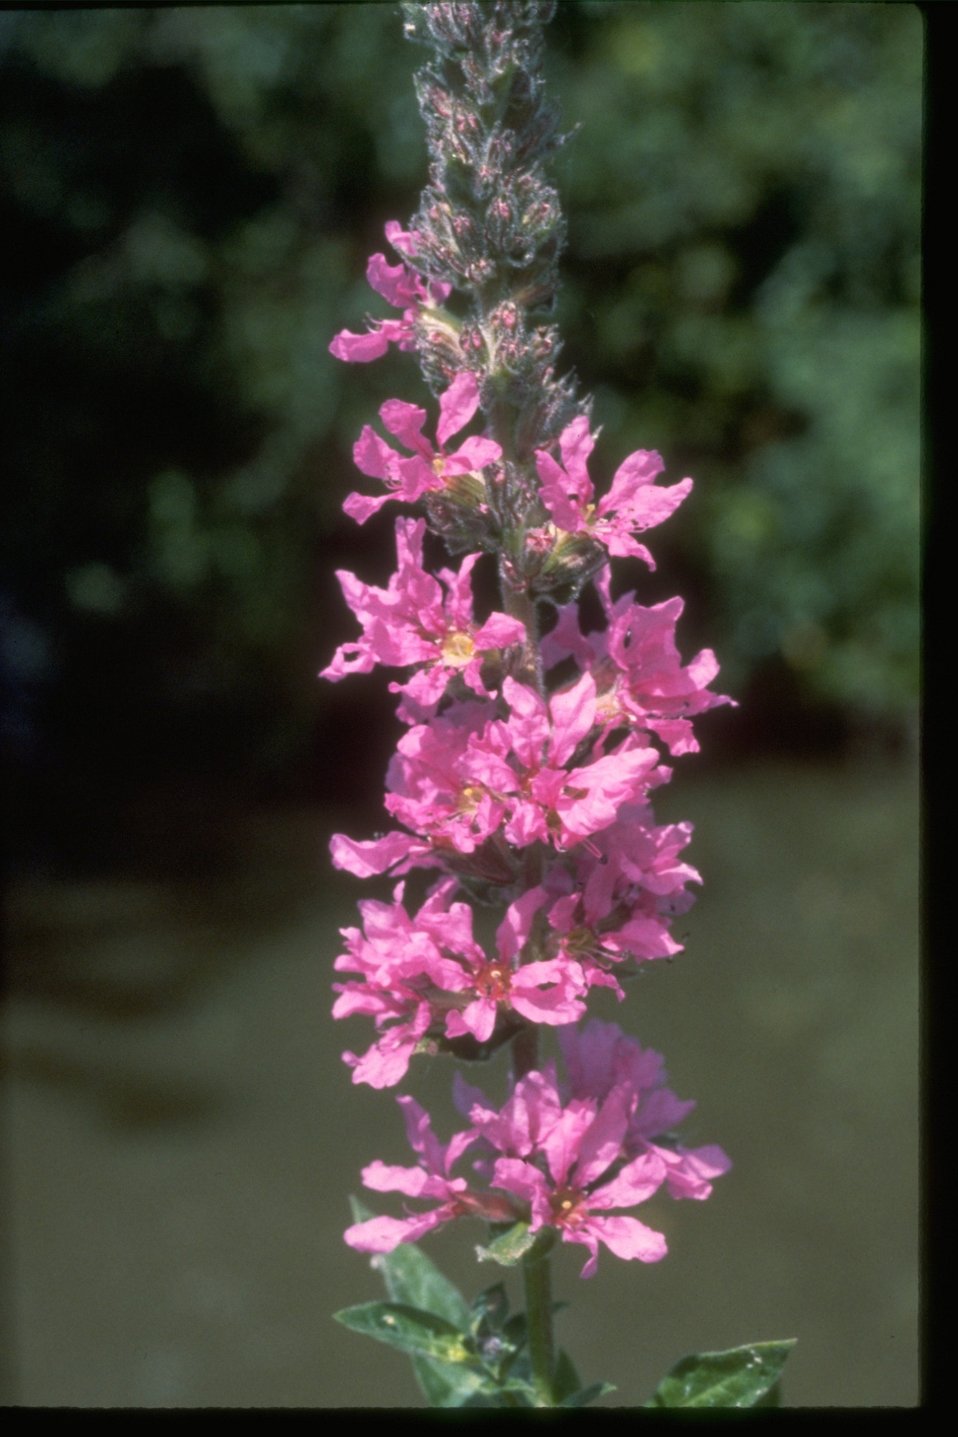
Purple Loosestrife flowers.